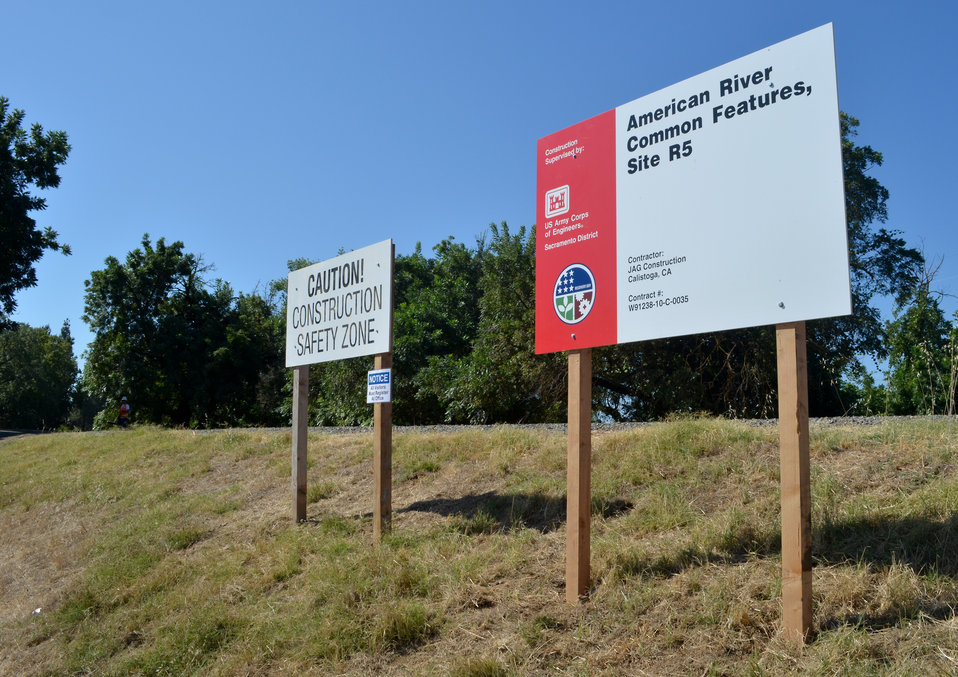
American River levee construction

Construction is under way on a levee improvement project on the American River in Sacramento, Calif., Aug. 31, 2011. Under the American River Common Features project, funded in part by the American Recovery and Reinvestment Act of 2009, the U.S. Army Corps of Engineers Sacramento District is installing a slurry wall in the levee to help strengthen it and make it harder for water to leak through.